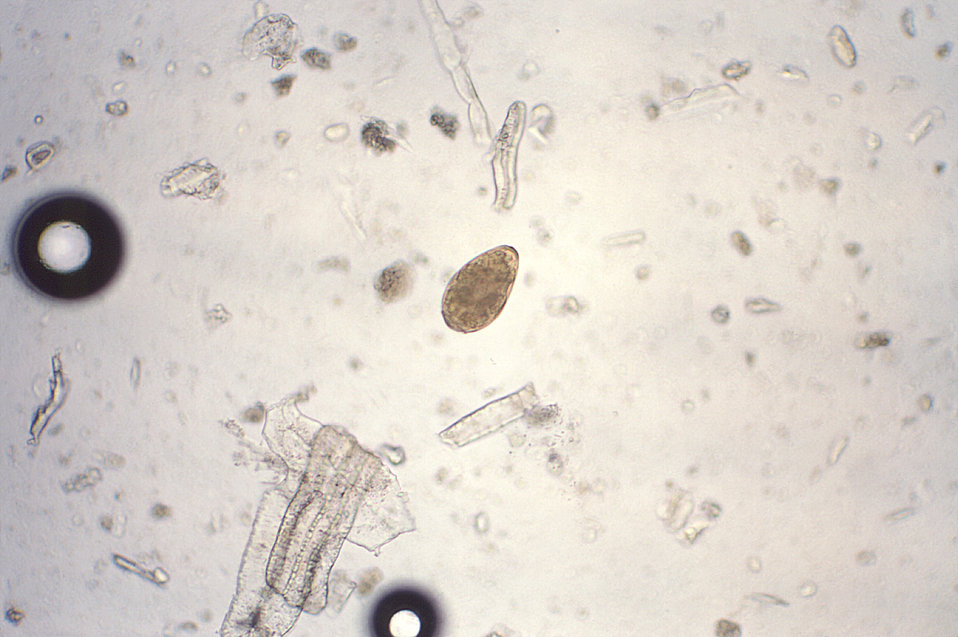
Magnified 128X, this photomicrograph revealed some of the ultrastructural morphology of a single trematode Paragonimus westermani egg. P. westermani eggs range from 80�m to 120�m long X 45�m to 70�m wide. They are yellow-brown, ovoid or elongate, with a thick shell, and often asymmetrical with one end slightly flattened. At the large end, the operculum is clearly visible. The opposite (abopercular) end is thickened. The eggs are unembryonated when passed in sputum or feces. See PHIL 1534 for an even closer view of this egg.